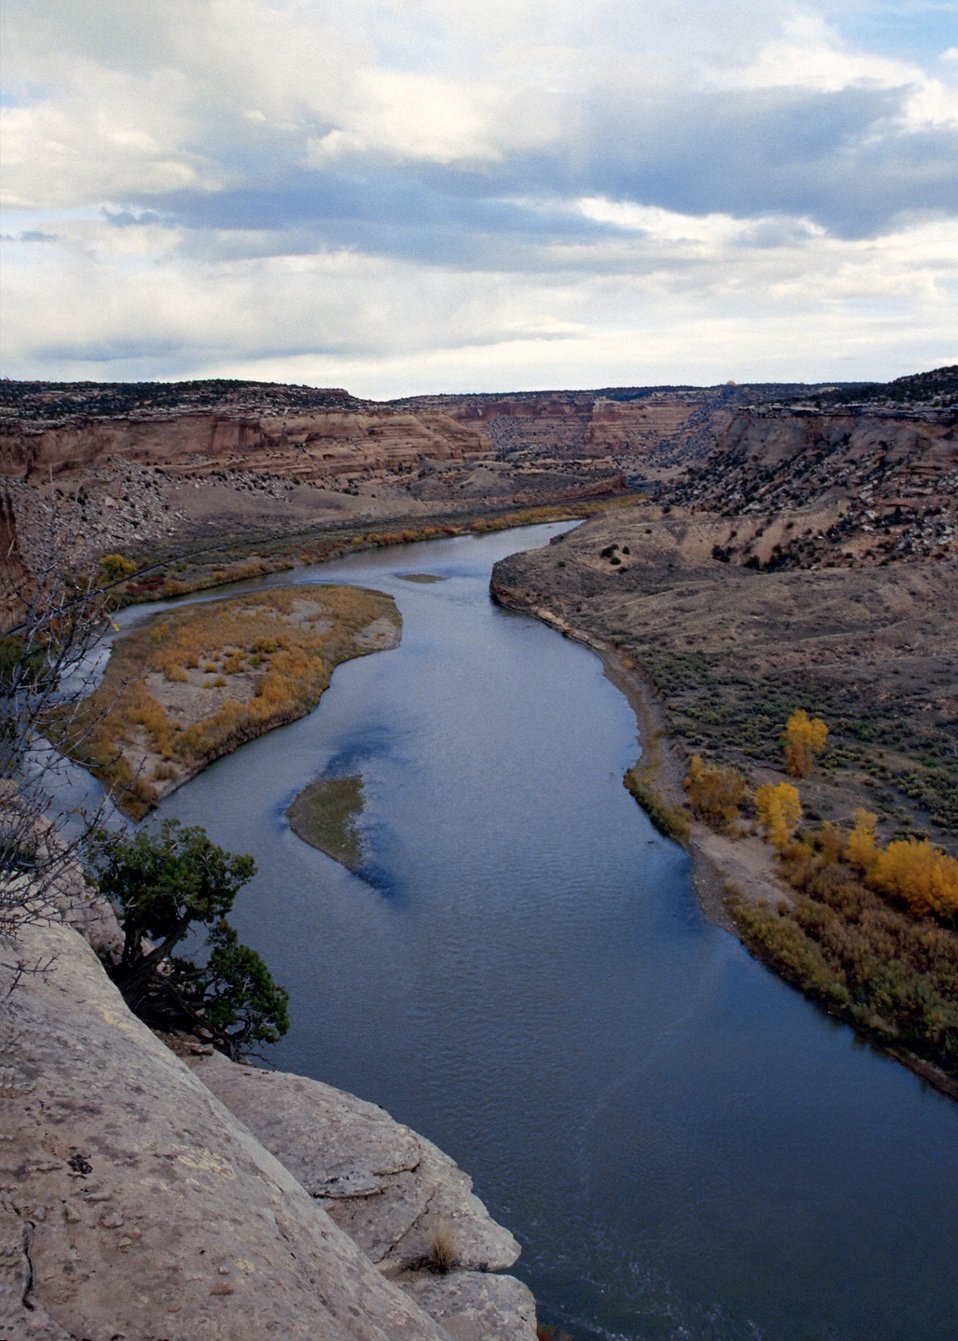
Colorado River (vertical)